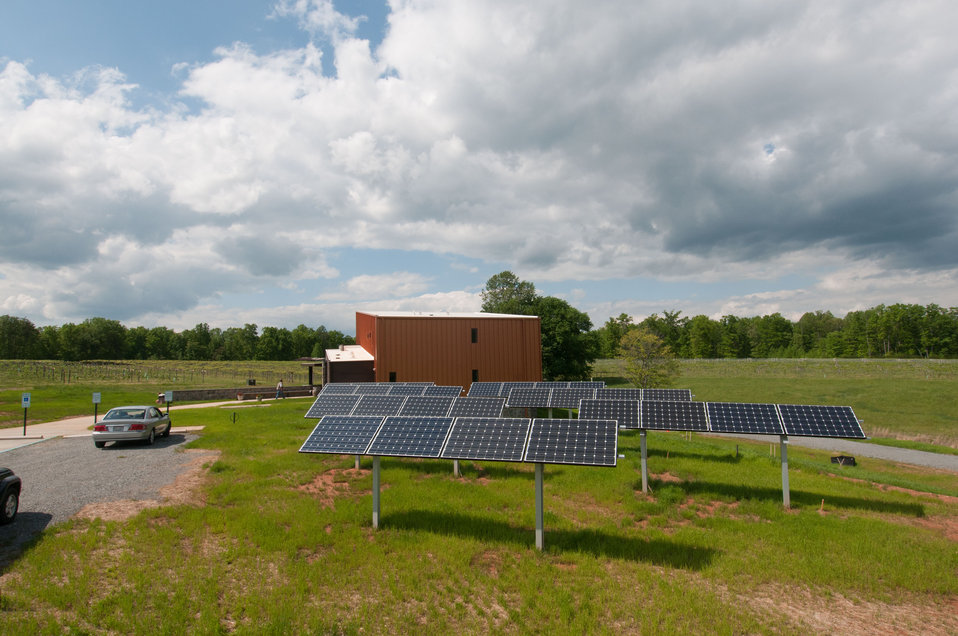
Solar array at Cooper Vineyards in Louisa, VA, the first winery on the East Coast and the second in the country to be awarded the fourth and highest, Platinum certification by Leadership in Energy and Environmental Design (LEED).
From a Virginia Wine Board Marketing Office press release, “The process of building a LEED platinum certified building was initially more expensive and arduous than co-owners, Jacque Hogge, MD and Geoffrey Cooper, MD expected, but they were able to get financial assistance from the United States Department of Agriculture. “Know that there are grants available to help with the costs of sustainable building projects,” Hogge advises to other potential green wineries. Cooper Vineyards received 2 of the 3 USDA (U.S. Department of Agriculture Rural Development (RD) Rural Energy Financing program) grants awarded in Virginia in 2010 to help with the expenses of their construction.”
Rural Energy Financing program focuses on loan guarantees, loans and grants to agricultural producers, businesses, cooperatives and rural residents for renewable energy systems and to make energy efficiency improvements.
The tasting room and building collects rainwater from the roof; uses low flow water fixtures to reduce usage by 40%; utilizes structurally insulated panels for the roof and walls; heats and cools the entire building using a geothermal system that includes pipes that are embedded in the parking lot; low-voltage LED lighting with daylight and occupancy sensors provide ample light when it is needed; a solar panel array provides more than 15% of the energy needs for the building, and much of the construction materials are from local and recycled material sources. For more information about USDA please go to www.usda.gov, Rural Development and Rural Energy Financing. LEED was developed by the U.S. Green Building Council (USGBC) is a 501 c3 non-profit organization committed to a prosperous and sustainable future for our nation through cost-efficient and energy-saving green buildings.